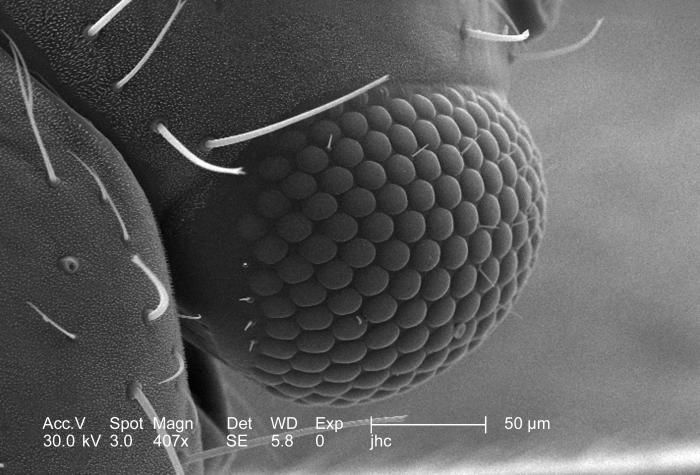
At a moderate magnification of 407x, this scanning electron micrograph (SEM) depicted the compound eye on the head of an unidentified green-colored bug found deceased on the suburban grounds in Decatur, Georgia. The compound eye is composed of numerous repetitive light-sensitive subunits known as "ommatidia" (pl. of ommatidium), which themselves are comprised of photo-receptive cells arranged in a cluster, surrounded by their own supportive, and pigment cells. The environmental surface of each ommatidium is covered by a transparent "cornea" as is the case in the human eye.